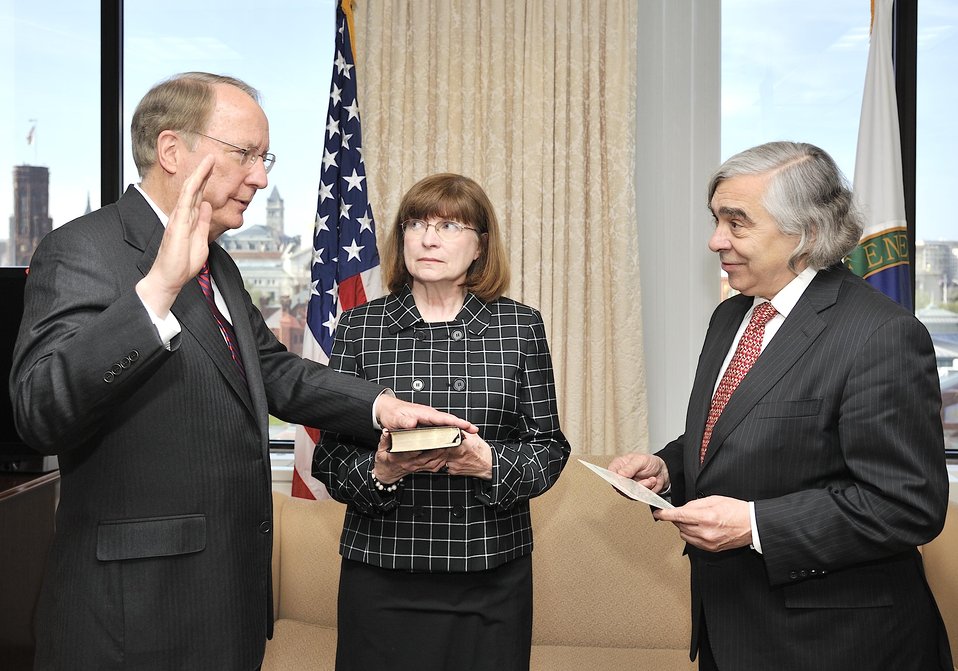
On April 17, 2014Secretary of Energy Ernest Moniz swore in Frank G. Klotz as the Department of Energy’s Undersecretary for Nuclear Security and NNSA Administrator in a private ceremony this afternoon. General Klotz was joined by his wife, Nancy, and Acting Administrator Bruce Held.